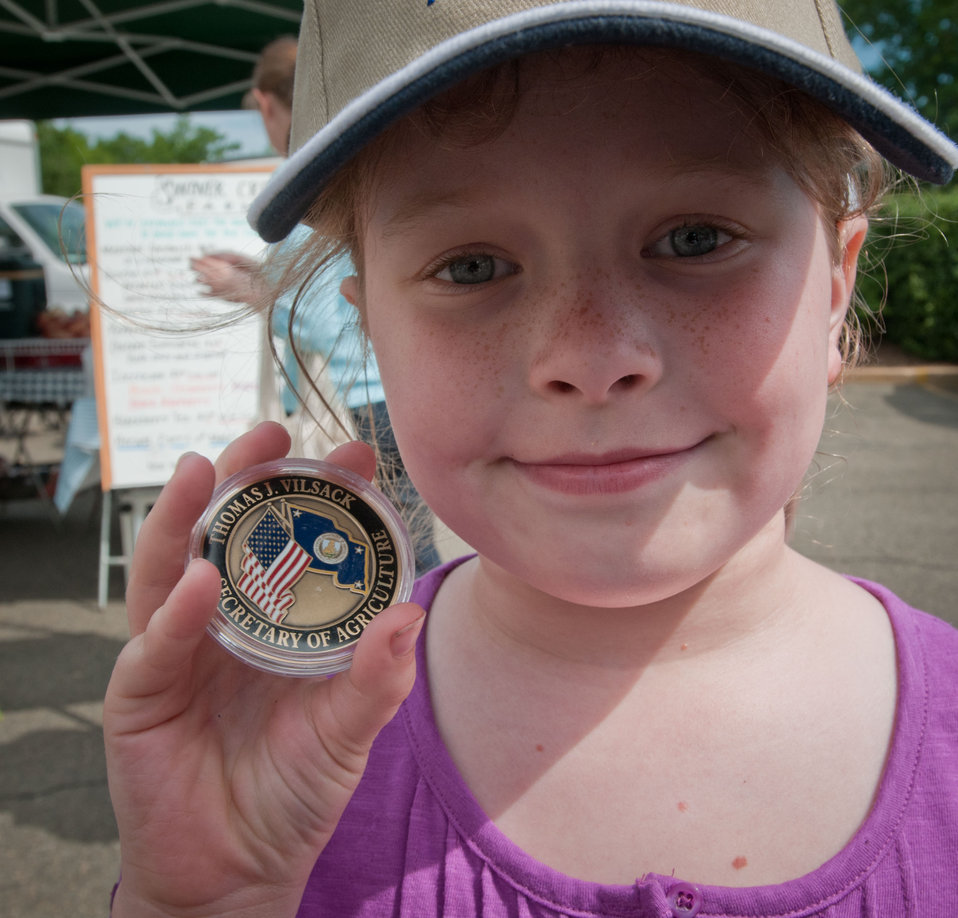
Isabelle Bechtel displays the coin of U.S Department of Agriculture (USDA) given to her by Agriculture Secretary Tom Vilsack at the USDA Farmers Market on Friday, Jun 3, 2011 in Washington, DC. The outdoor market is located at the corner of 12th Street and Independence Avenue and will be open every Friday from 10:00 a.m. - 2:00 p.m. through November 18th. Special events will be happening every Friday at the market and at the adjacent People's Garden all season.